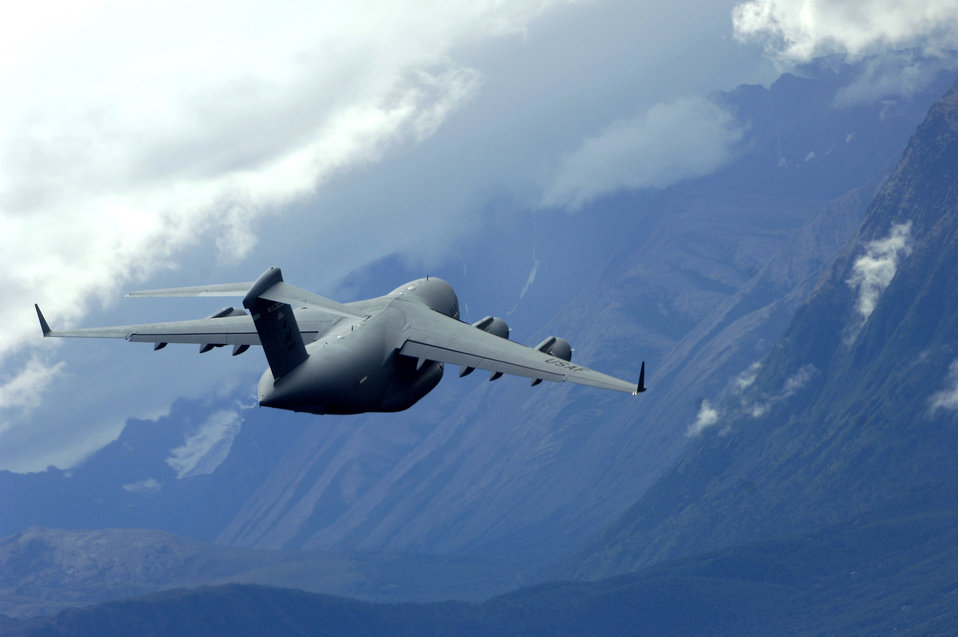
C-17 over Alaska

A C-17 Globemaster III banks after conducting airdrops Aug. 20 over the Chugach Mountain Range in Alaska. The C-17 is assigned to the 517th Airlift Squardon from Elmendorf Air Force Base, Alaska.